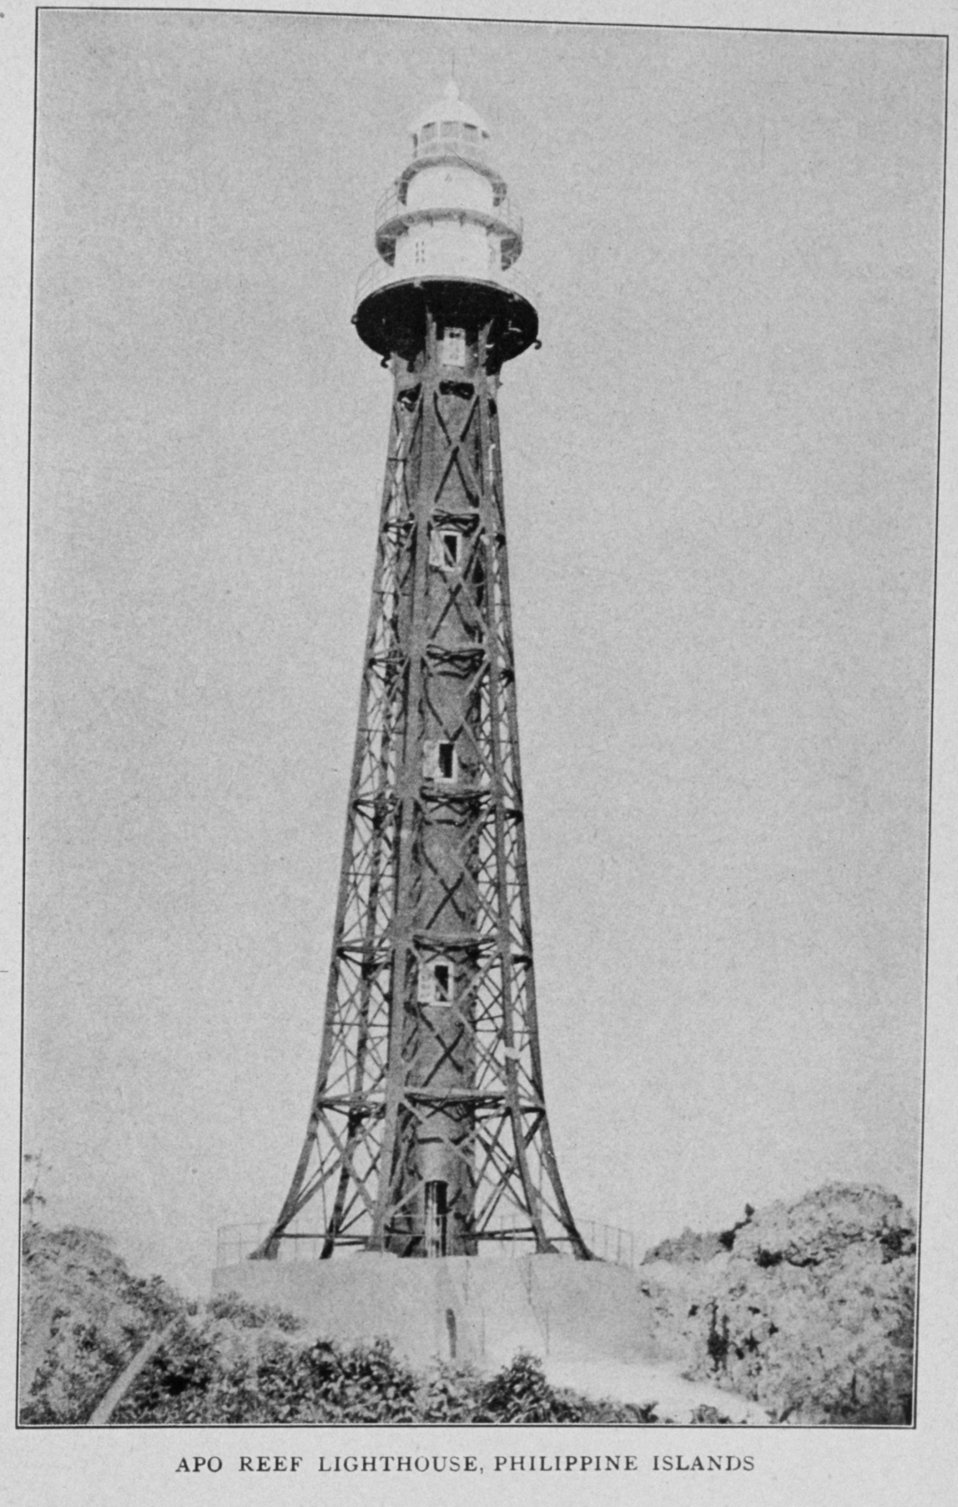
Apo Reef Lighthouse, Philippine Islands. In: 'Lighthouses and Lightships of the United States' by George R. Putnam, p. 174, 1917. Houghton Mifflin and Company, Boston. Library Call No. 527.7 P98.